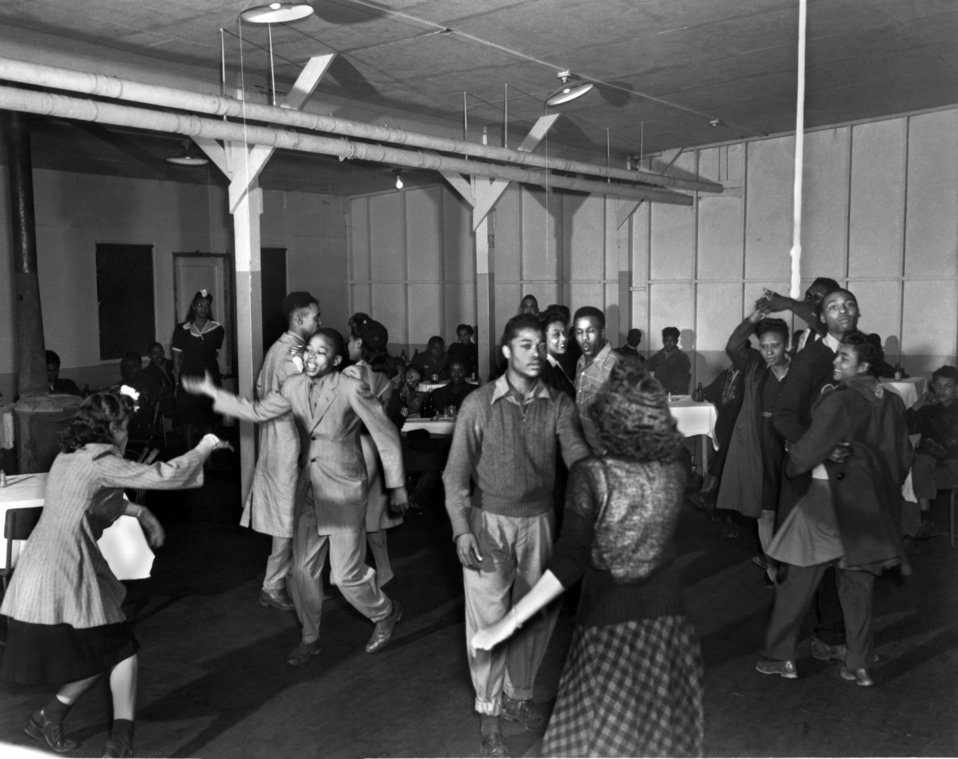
Teen Dance

1310-9 DOE photo by Ed Westcott
Oak Ridge Tennessee 12-14-1945